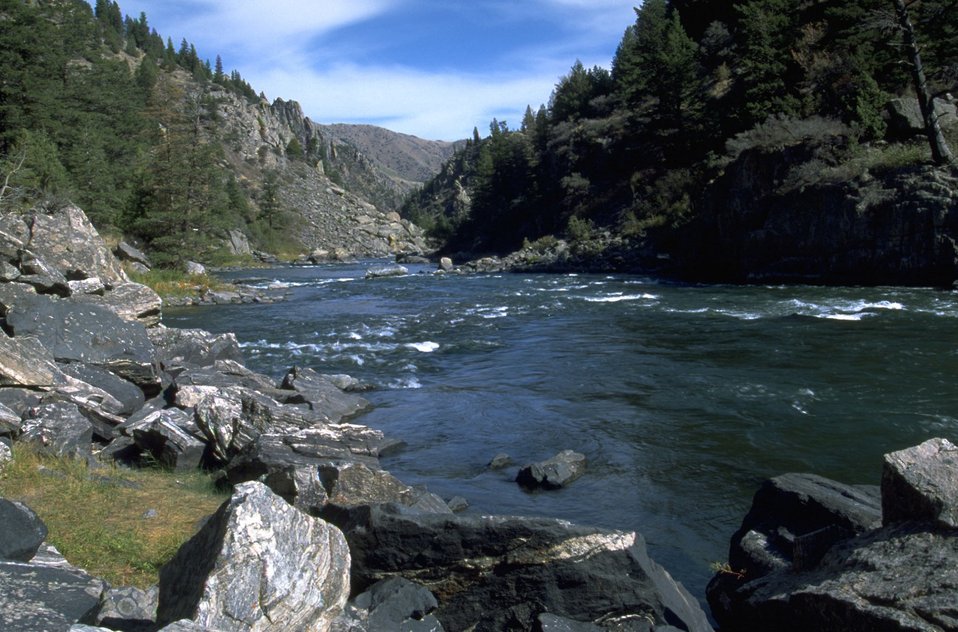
Looking downstream of the Madison River